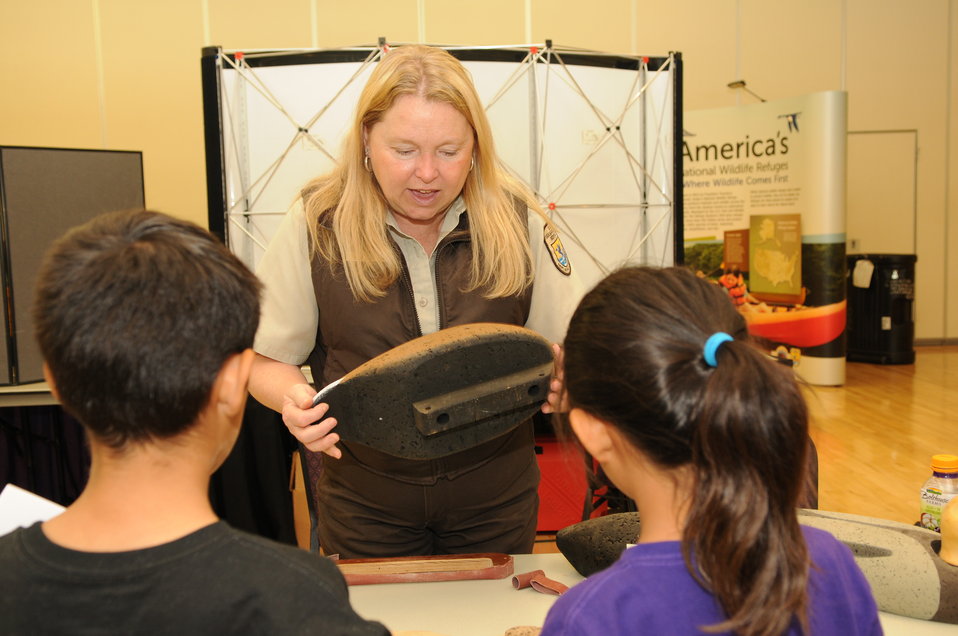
Youth Outreach

The U.S. Fish & Wildlife Service sponsored the 2012 Federal Duck Stamp Art Contest September 28 and 29 in Ogden, Utah, at Weber State University. A panel of five judges was responsible for choosing the art work used to design the 2013-2014 Migratory Bird Hunting and Conservation Stamp.